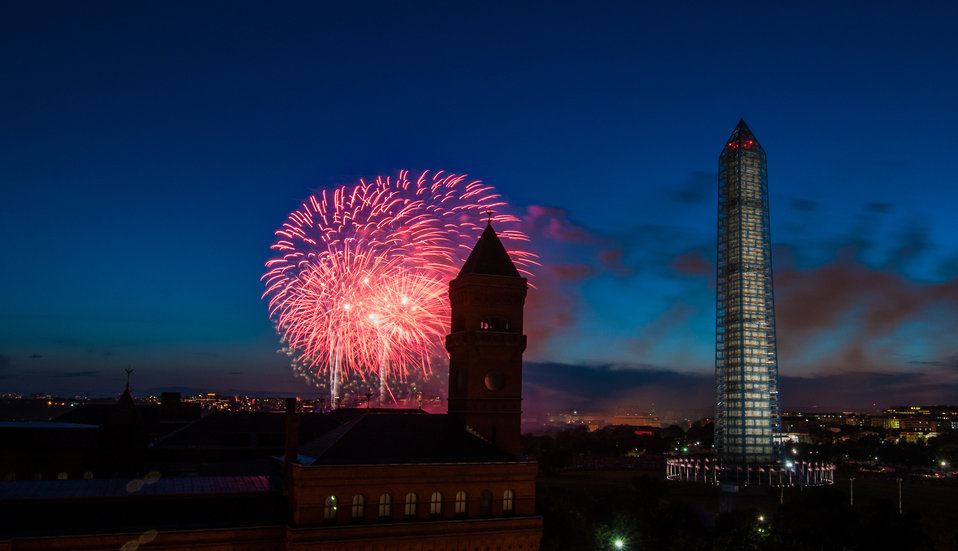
4th of July fireworks as seen from the U.S. Department of Agriculture (USDA) headquarters building, with the USDA Forest Service Yates Building in the foreground, left, and the Washington Monument in Washington, D.C., on July 4, 2013.